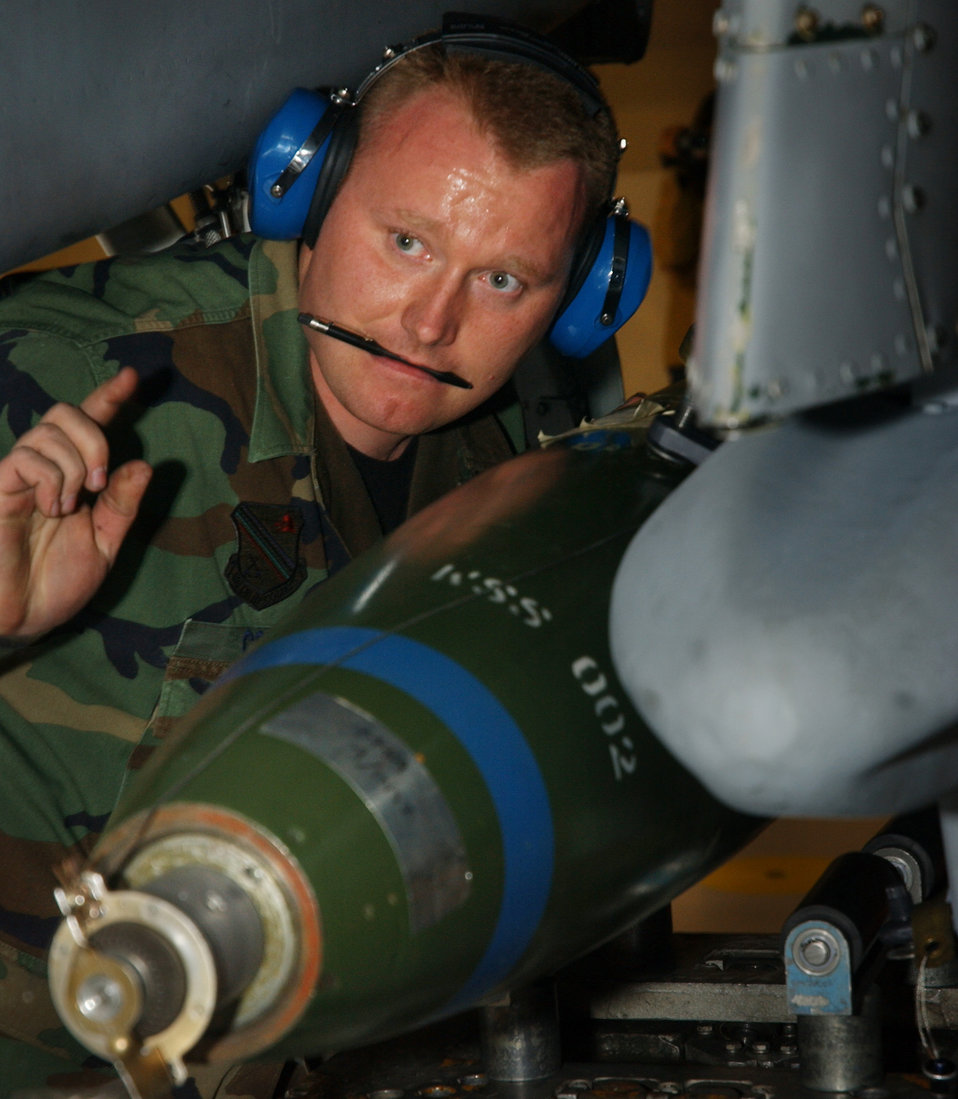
Locking in

EIELSON AIR FORCE BASE, Alaska-- Staff Sgt. Edward Cox directs the lift truck removal after locking in a MK-82 500 pound bomb during the Load Crew of the Quarter competition here Oct. 21. The competition evaluates weapons loaders in timeliness and accuracy of loading munitions. Sergeant Cox is a weapons crew chief assigned to the 354th Aircraft Maintenance Squadron.